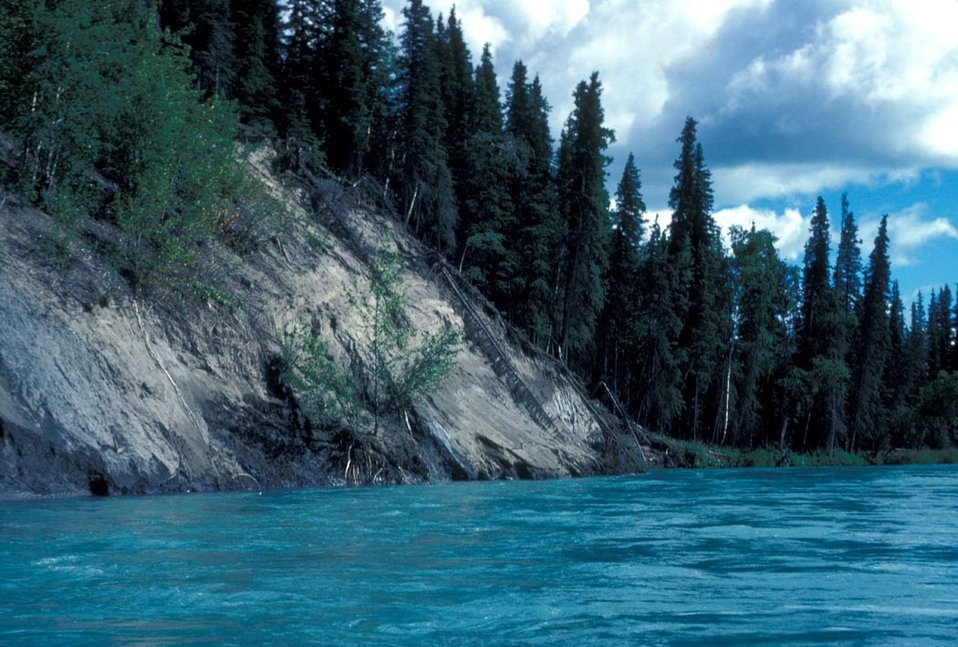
Kenai NWR riverbank

A scene along the Kenai River bank in the Kenai National Wildlife Refuge. (USFWS)